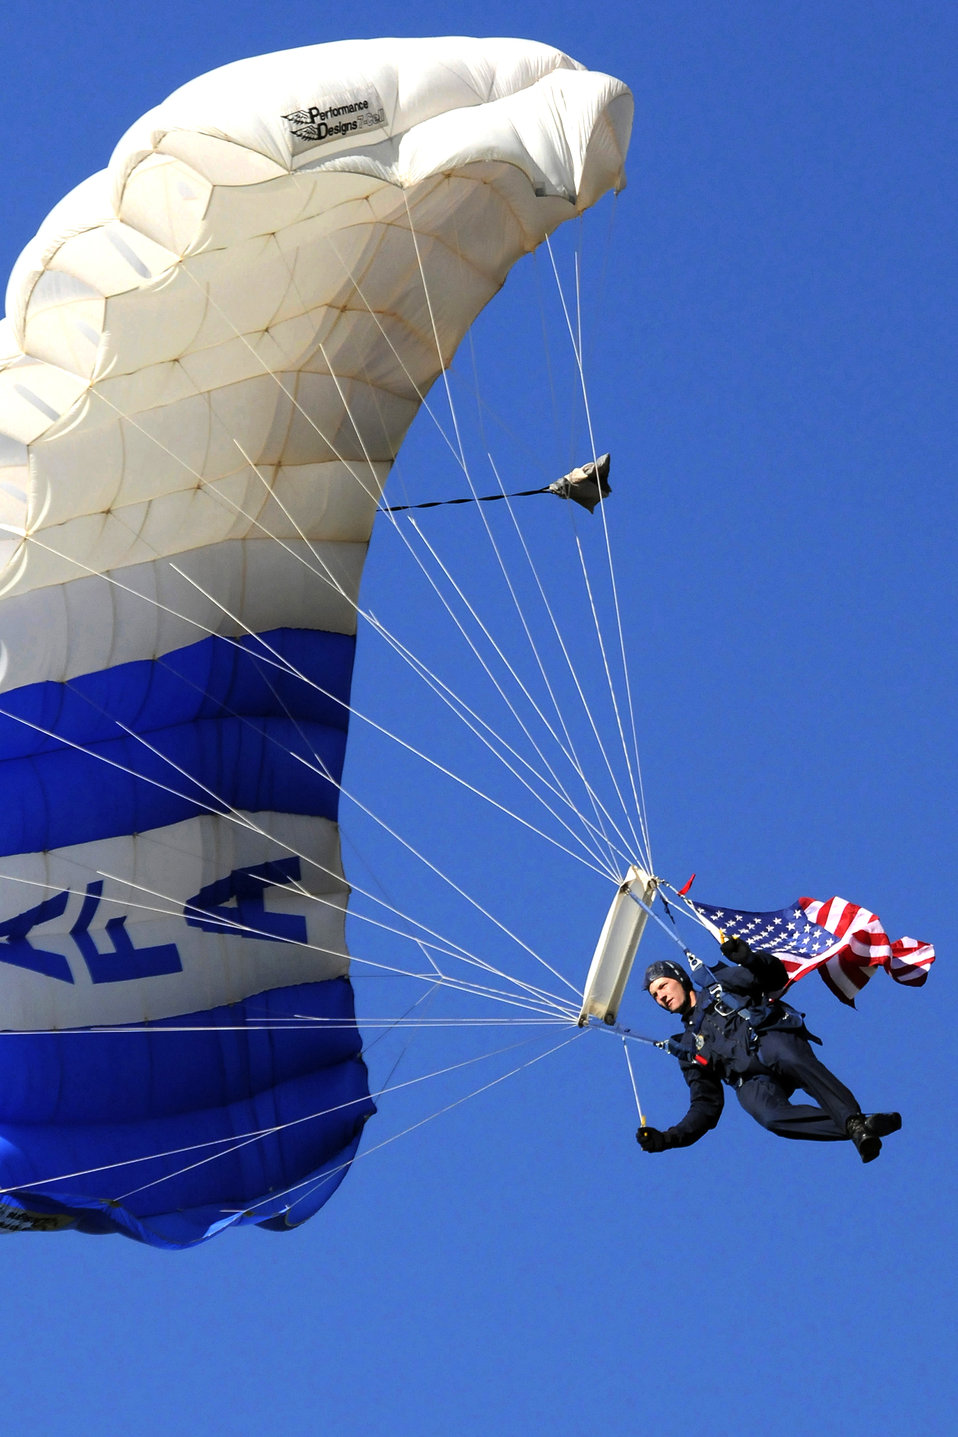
Welcome to the wing

U.S. Air Force Academy Cadet 1st Class Spencer Walker parachutes onto Stillman field Aug. 5 to mark the start of the traditional Acceptance Parade. The parade marks the official end of basic cadet training and the formal welcoming of the new class into the cadet wing.